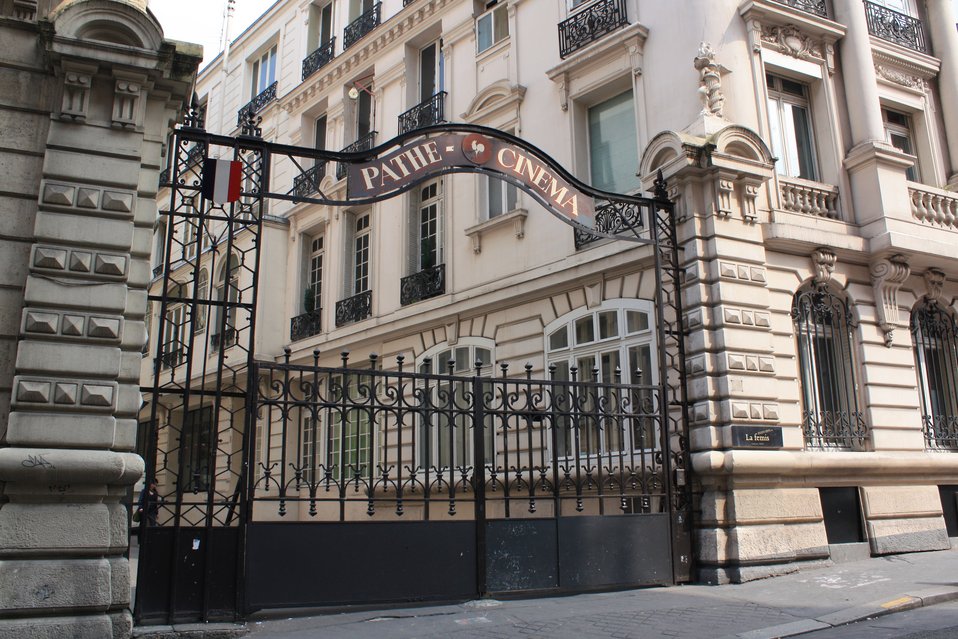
Fran√ßais†: Ext√©rieurs des anciens studios Path√©, o√π se trouve aujourd'hui l'√©cole de cin√©ma de la F√©mis (voir panneau √† droite sur la photo).